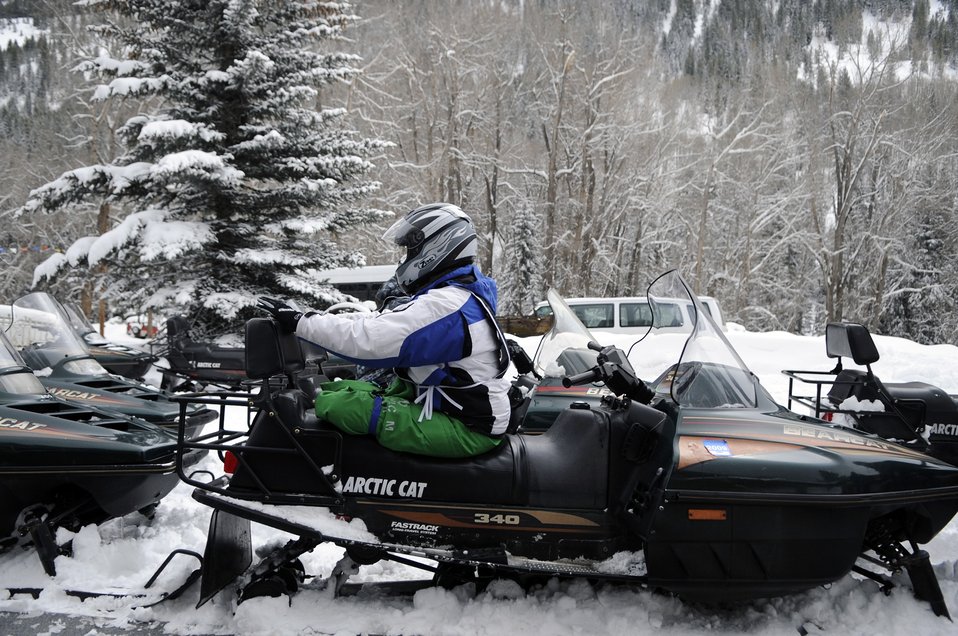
23rd National Disabled American Veterans Winter Sports Clinic

Senior Airman Kevin Krogh waits to drive a snowmobile Apr. 1 during the 23rd National Disabled American Veterans Winter Sports Clinic in Snowmass Village, Colo. Airman Krogh lost both legs in a major car accident in 2007 and this is his first year attending the sports clinic. Airman Krogh is assigned to Fort Sam Houston in San Antonio.